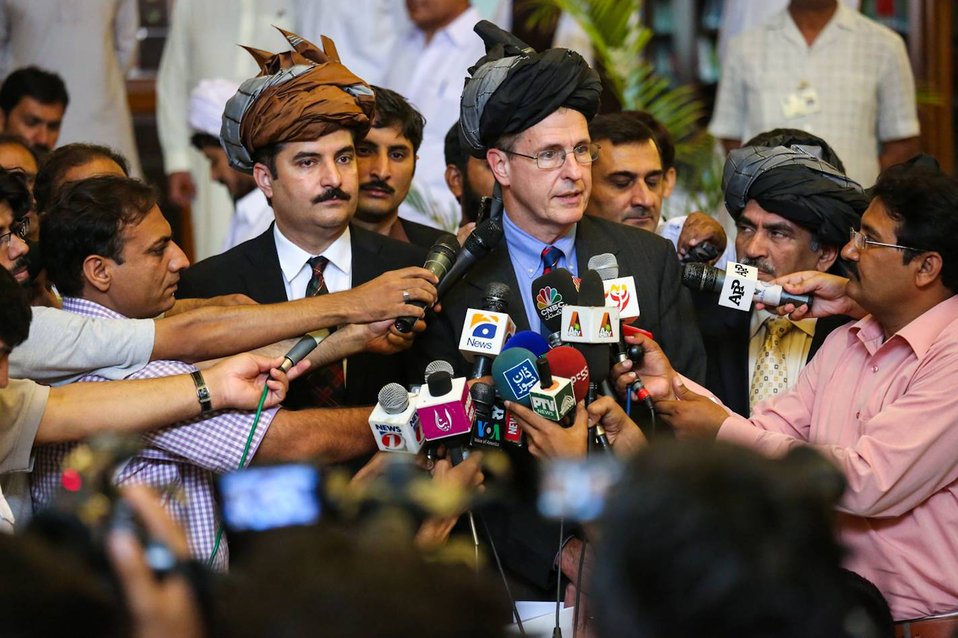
Islamabad, September 12, 2012 - Project Launch Ceremony of Waran Canal Irrigation System